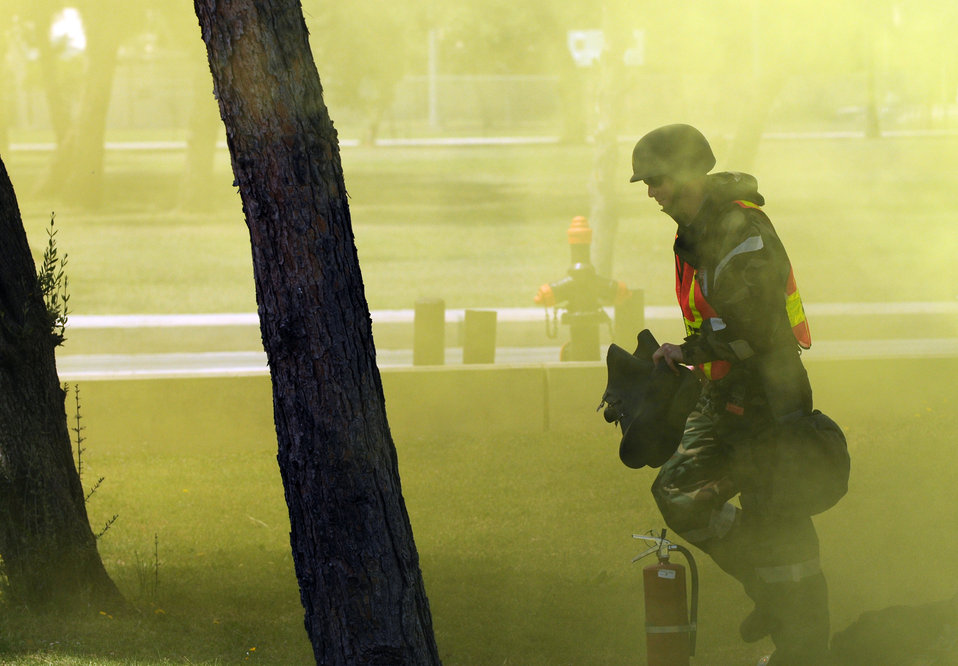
Incirlik's anti-terrorism exercise

Capt. Kevin Manis prepares to don the rest of his chemical warfare suit during a simulated chemical agent during an anti-terrorism exercise May 25, 2010, at a park in Incirlik Air Base, Turkey. Captain Manis is with the 39th Air Base Wing Exercise Evaluation Team.